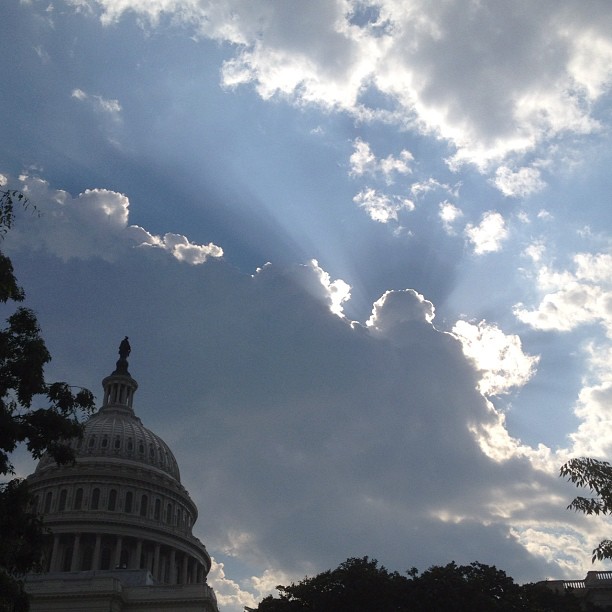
Beautiful Friday morning at the Capitol.